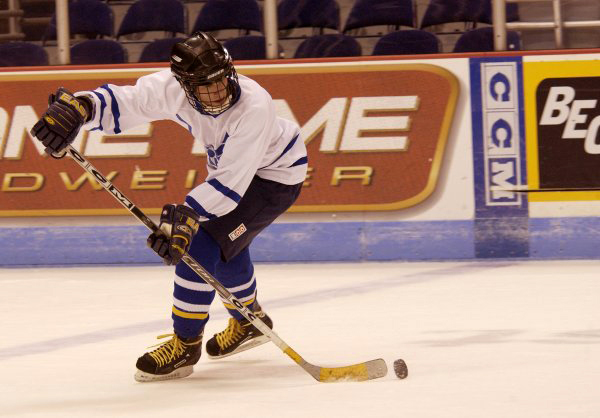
Hockey time

CHARLESTON, S.C. -- Lennon Davis receives a pass on his way to make a shot at the Navy's goal. The Airmen are on the Air Force hockey team from nearby Charleston Air Force Base. They defeated the Navy team 6-5.